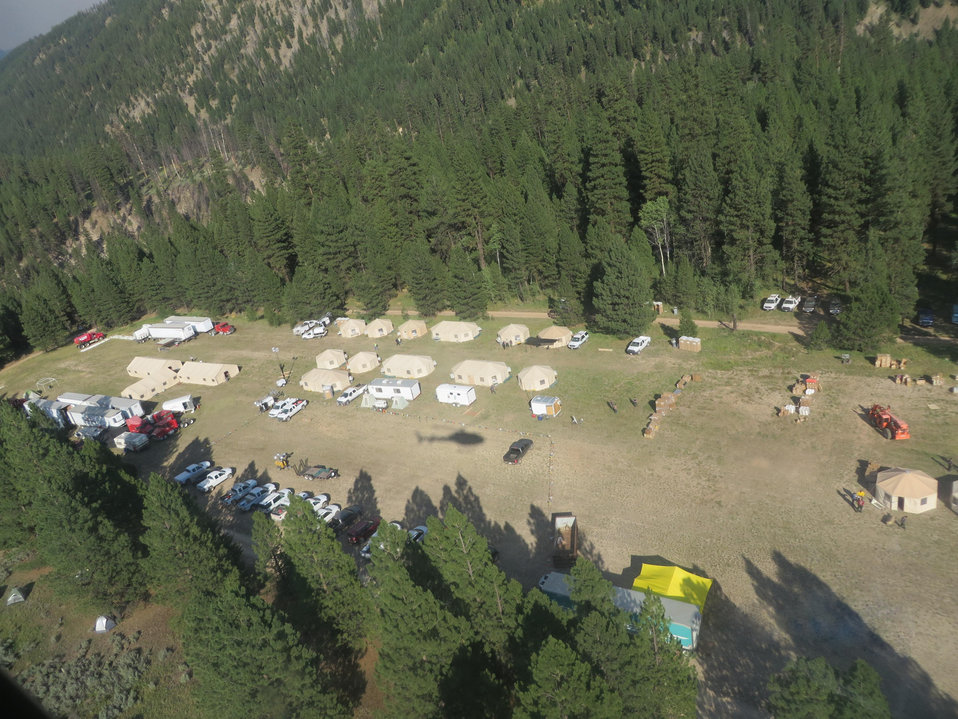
Fire camp on Warm Springs Airstrip in Boise National Forest set up to fight the Ridge Fire. The Ridge Fire in the Boise National Forest, ID near Lowman, ID began on Jul. 16, 2013 by lightning and has consumed approximately 5,143 acres. The Ridge Fire is approximately 20% contained.